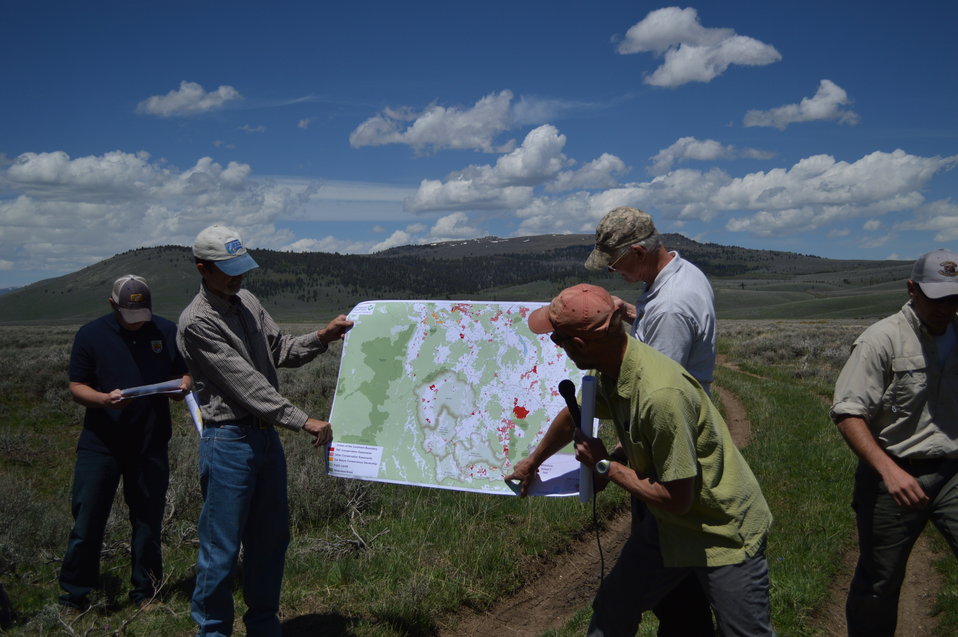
Regional Leadership Visit to Montana 2014